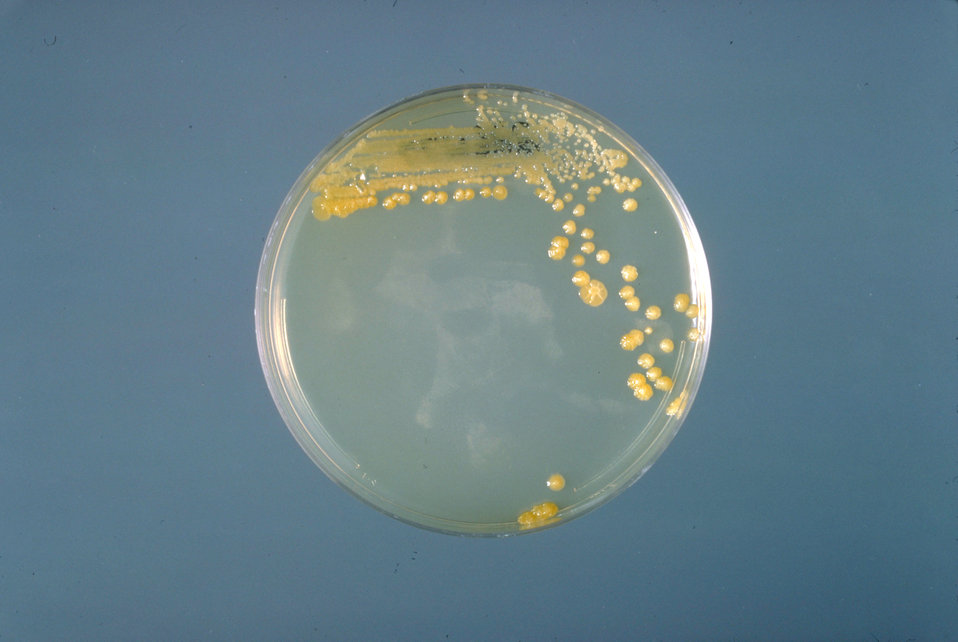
This is a trypticase soy agar plate culture of Enterobacter sakazakii after three days of growth at 25� C.